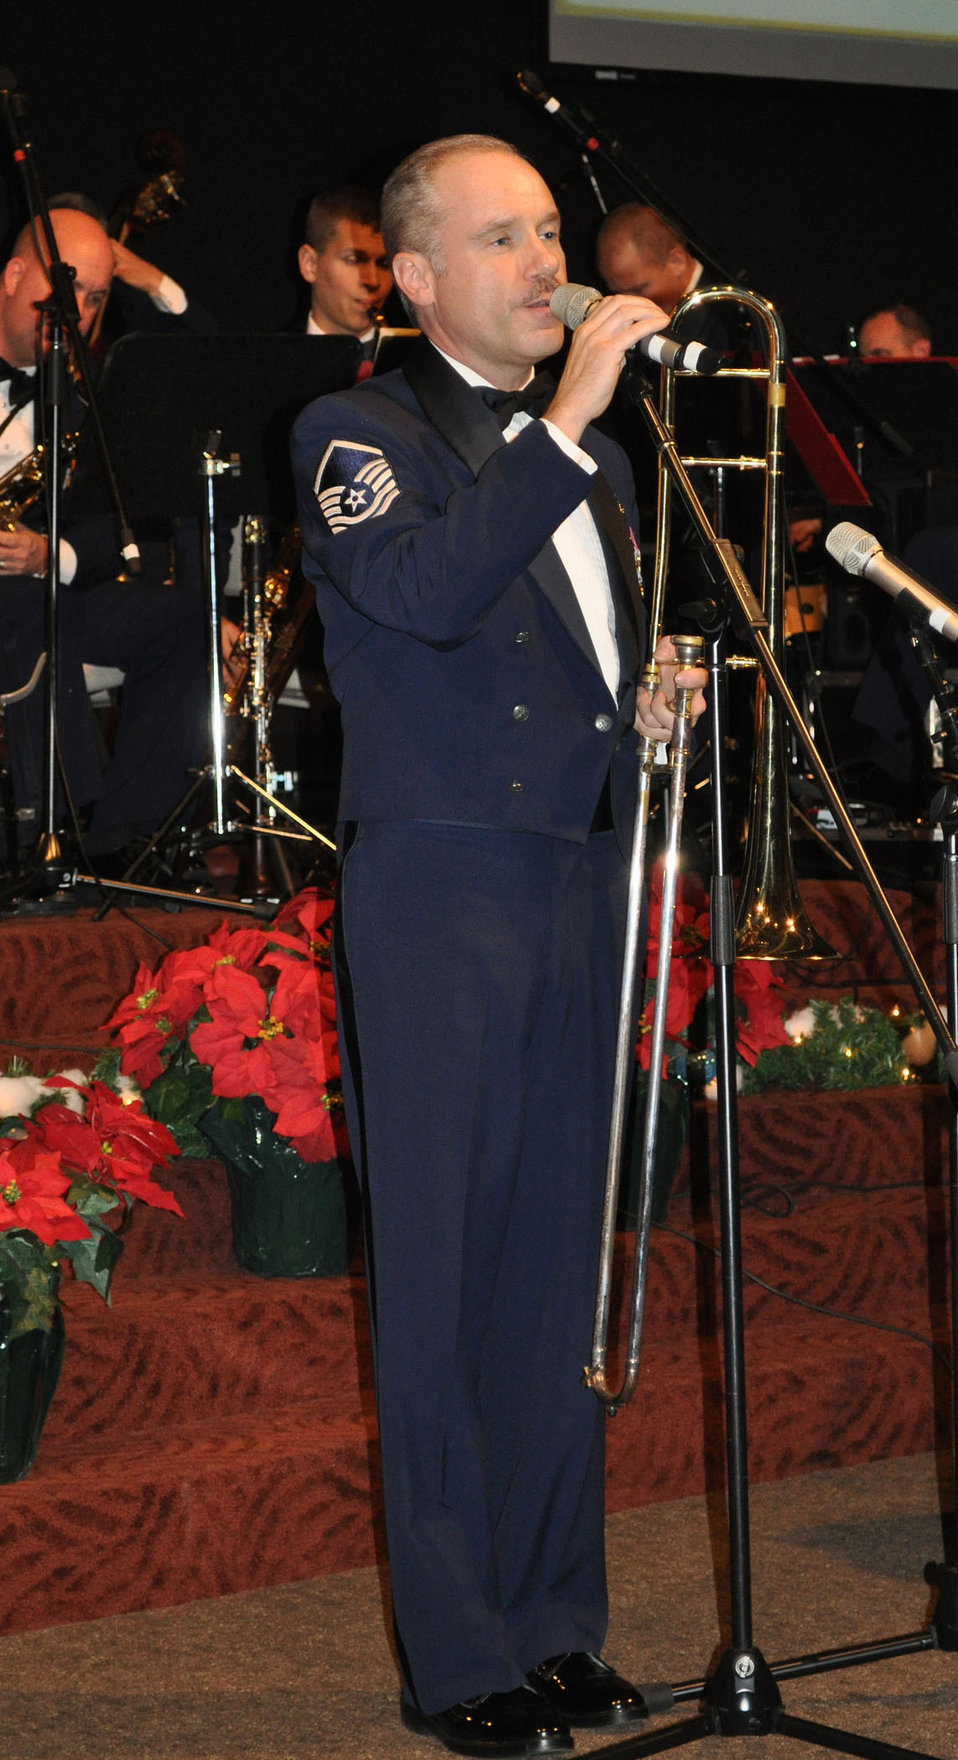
Thomas Eckert

Master Sergeant Thomas D. Eckert, an office assistant with the San Francisco Bay-Delta Fish and Wildlife Office, served in the Air Force from September 1985 to April 2011.